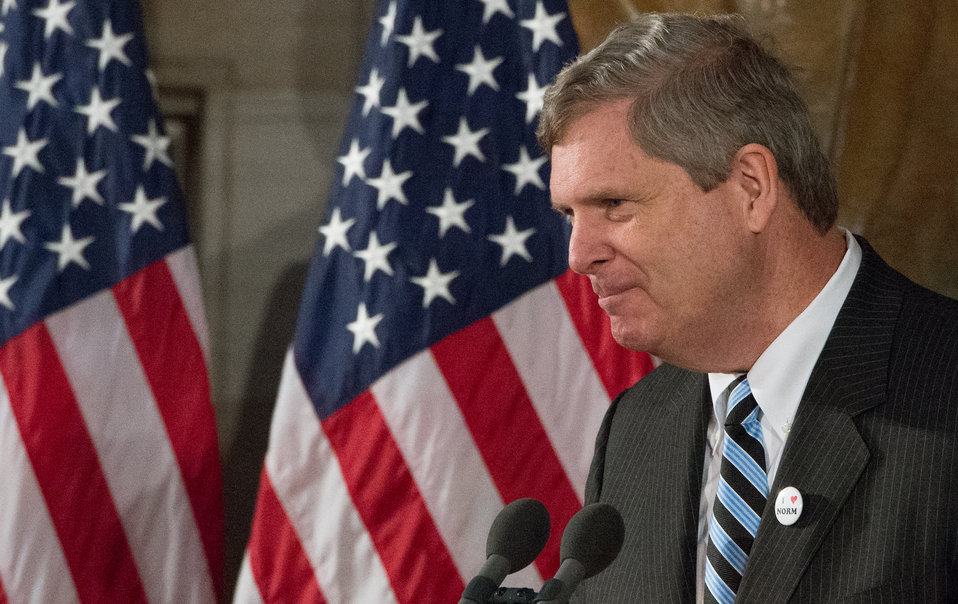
Agriculture Secretary Tom Vilsack speaks at the dedication of the Dr. Norman Borlaug statue in the National Statuary Hall at the U. S. Capitol, in Washington, D.C. on Tuesday, Mar. 25, 2014. Today commemorates 100 years since Dr. Borlaug’s birth. Through his scientific and humanitarian achievements, Nobel Laureate Dr. Norman E. Borlaug (1914-2009) has been credited with saving millions of people from starvation in developing countries. His collaborative work with scientists in Mexico on a high-yielding, disease resistant dwarf wheat sparked the Green Revolution of the 1960s. Other speakers include Majority Leader of the The National Statuary Hall Collection in the U.S. Capitol is composed of statues donated by individual states to honor persons notable in their history.